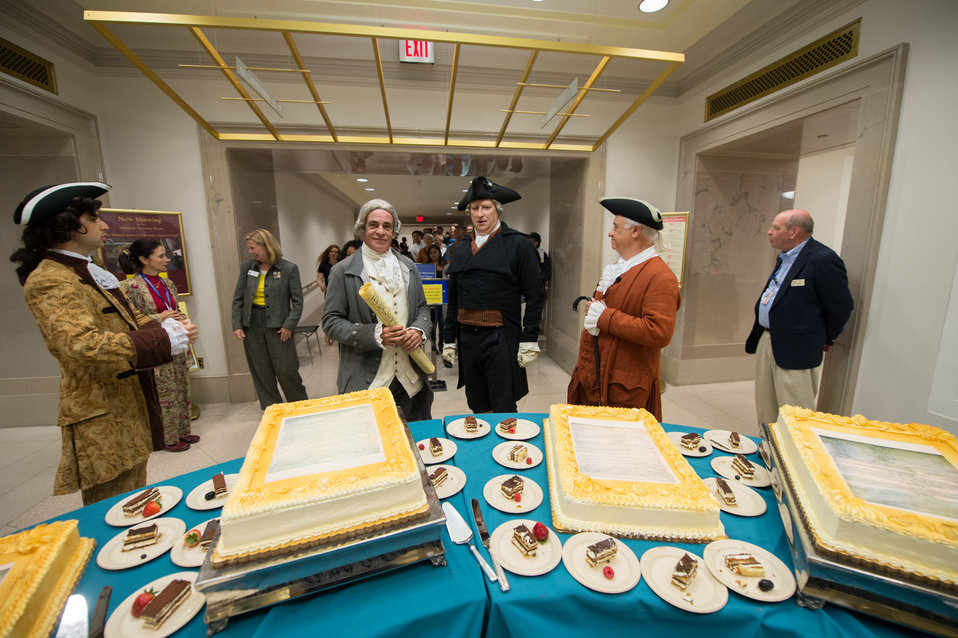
Cake and the founding Father

The Founding Fathers get ready to serve cake